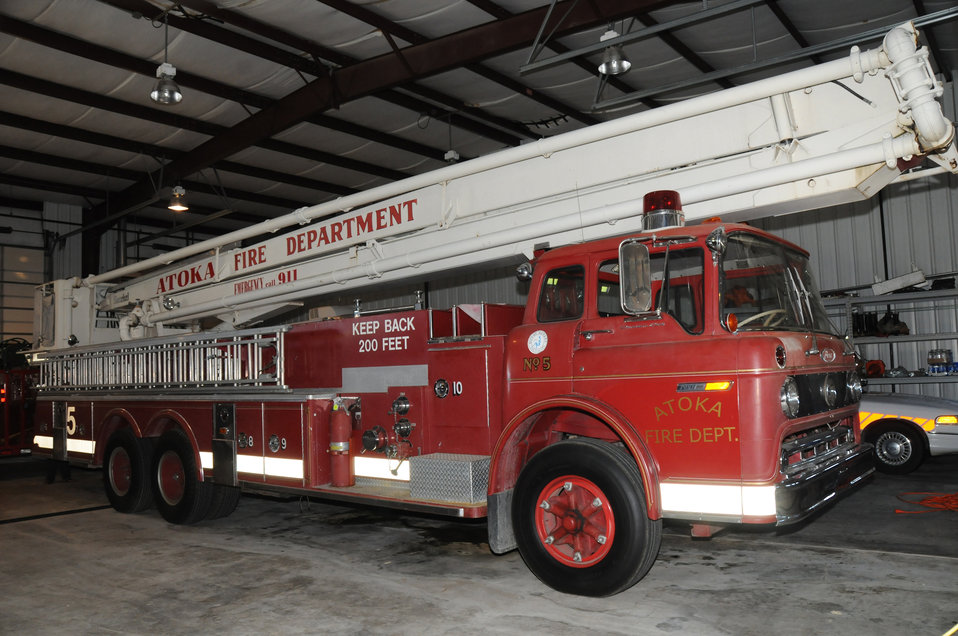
The U.S. Department of Agriculture (USDA) Rural Development (RD) Housing and Community Facilities Programs provided funding to the Atoka, Oklahoma fire department through the American Recovery and Reinvestment Act (ARRA) on August 12, 2009.